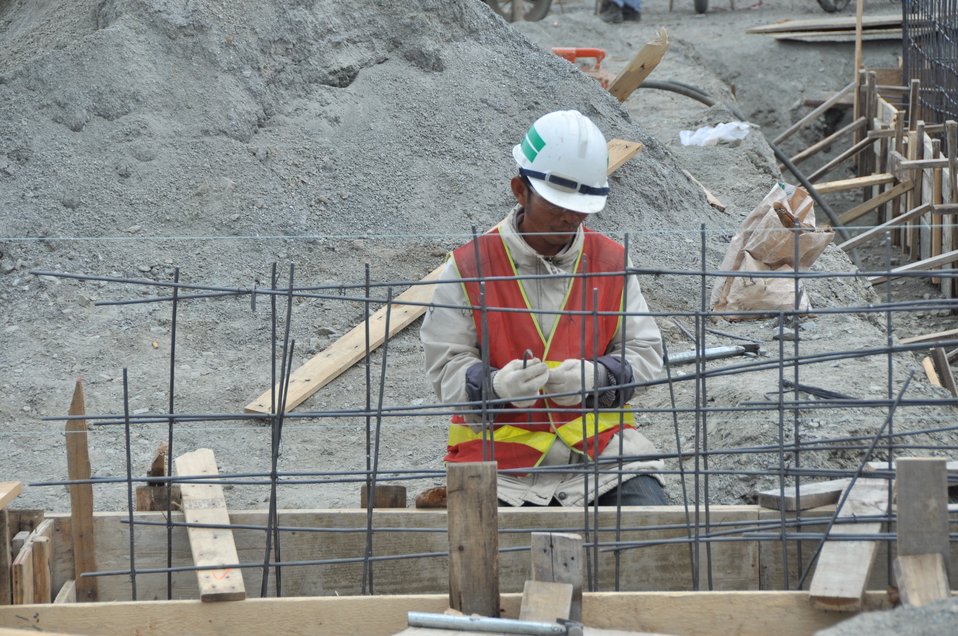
USAID Dioxin Contamination Project Progress: Water Treatment System

Progress at the Environmental Remediation of Dioxin Contamination Project at the Danang Airport

December 19, 2013